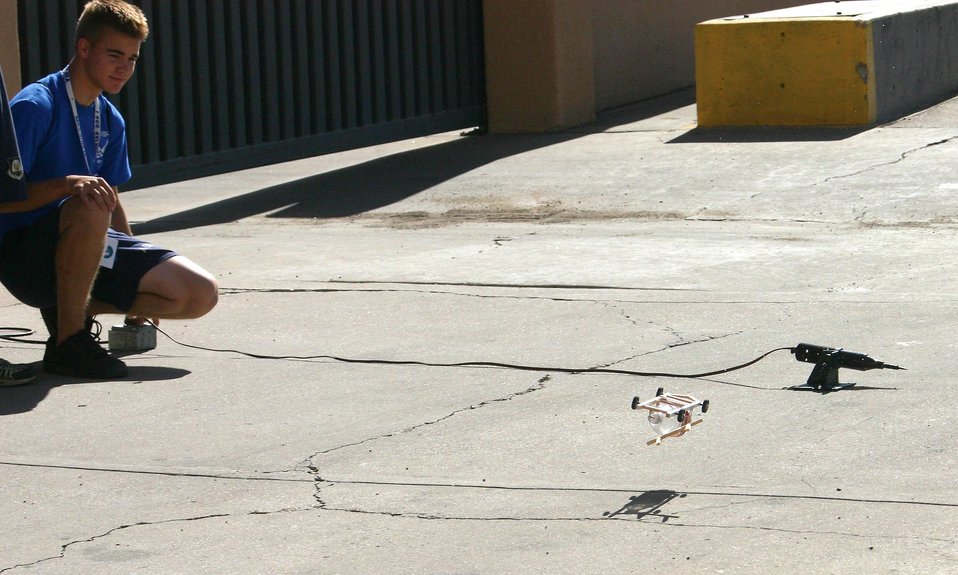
Junior ROTC cadets explore Air Force careers

Air Force Junior ROTC Cadet Matthew Lemley test fires his bottle rocket car July 24 during a rocket car construction contest at the University of New Mexico in Albuquerque. Cadets from Junior ROTC units worldwide visited various science and technology centers as part of the 2007 Air Force Junior ROTC Aerospace and Technology Honor Camps. Approximately 450 cadets attended one of eight camps this year in New Mexico and Oklahoma. Currently, there are more than 100,000 cadets in the Air Force Junior ROTC program worldwide.